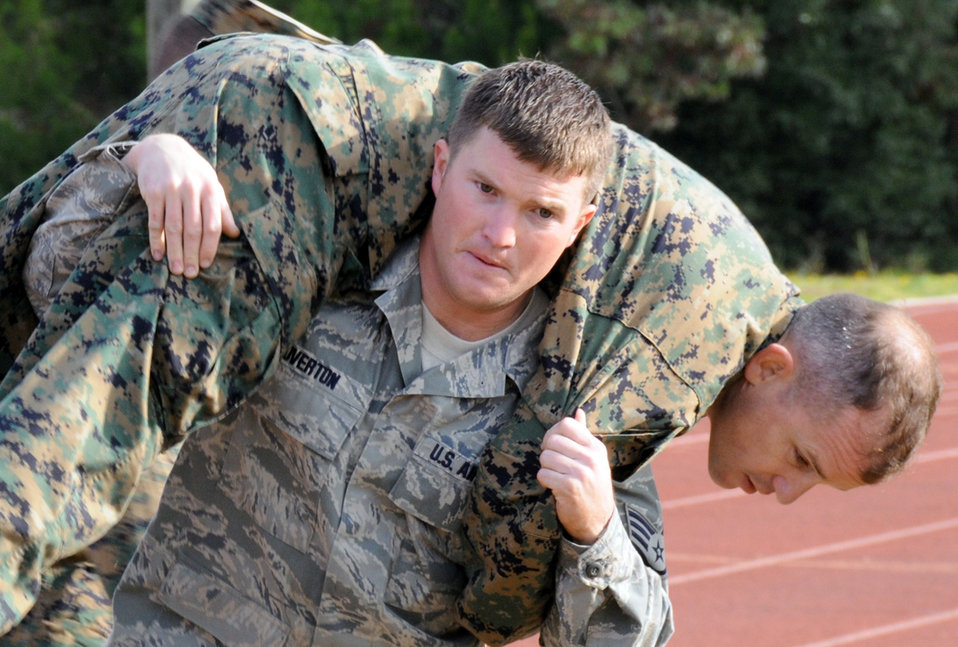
Eglin Airmen join Marines in combat fitness test

Staff Sgt. William Overton carries Marine Lt. Col. James Wellons during the under fire maneuver portion of the Marine combat fitness test Nov. 25, 2009, at Eglin Air Force Base, Fla. Sergeant Overton is assigned to the 96th Logistics Readiness Squadron, and Colonel Wellons is the 501st Marine Fighter Attack Training Squadron commander.